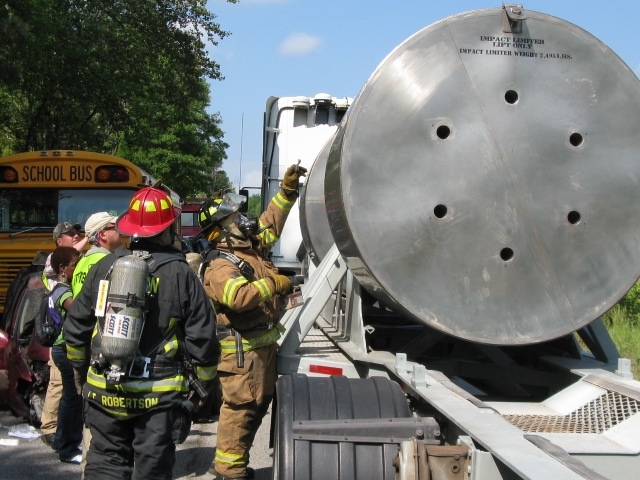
Georgia Hosts Multi-Agency WIPP Transportation Exercise

A firefighter trained to respond to radiological events performs a radiological survey of the WIPP shipping package as part of a WIPP transportation exercise in Morgan County, Georgia.